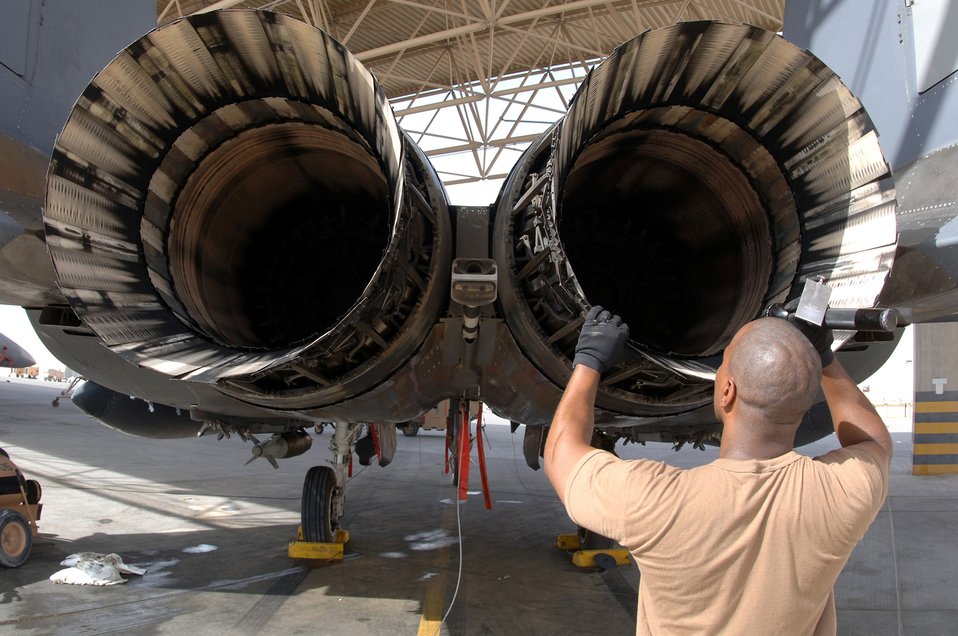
Deployed F-15s

A maintainer with the 379th Expeditionary Aircraft Maintenance Squadron inspects the engine of an F-15E Strike Eagle at a forward-deployed location in Southwest Asia, on Wednesday, April 5, 2006. The F-15E is a dual-role fighter designed to perform air-to-air and air-to-ground missions. It is deployed from Seymour Johnson Air Force Base, N.C.